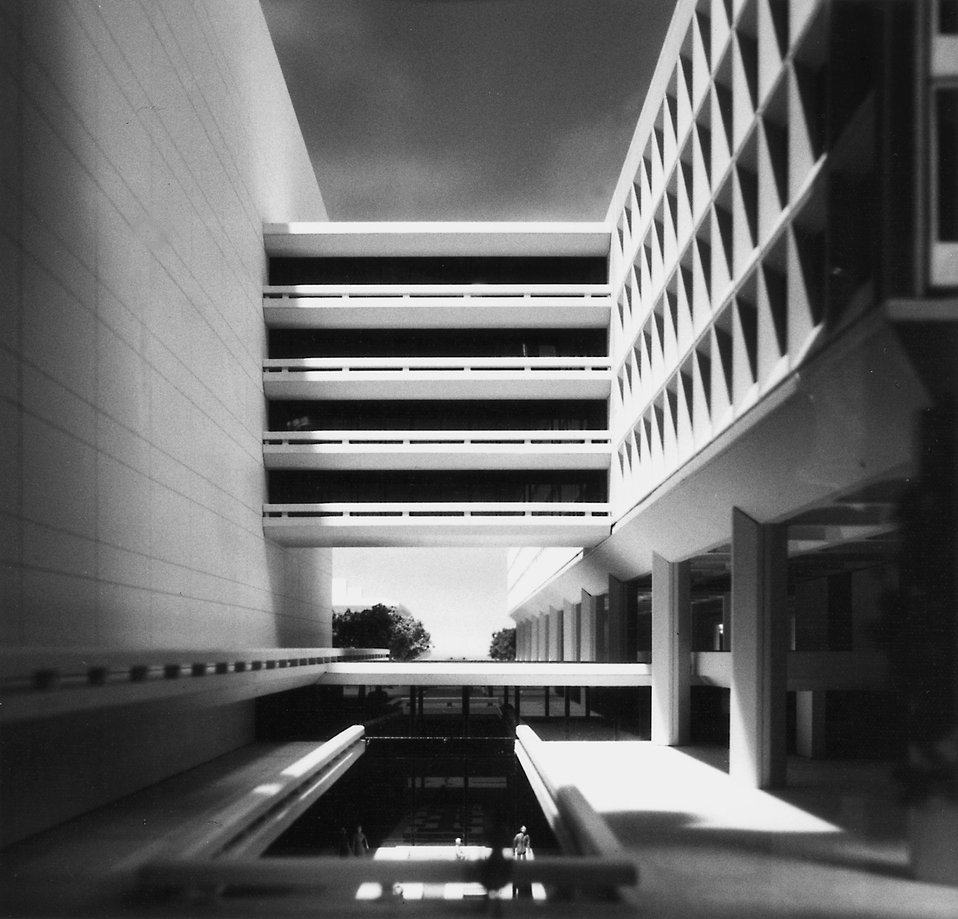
Federal Office building No. 5 Washington DC